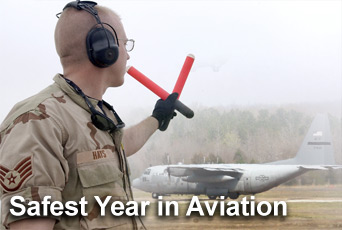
Air Force announces 2006 as safest year in aviation

Fiscal year 2006 was the safest year in aviation ever for the Air Force. The year marked the lowest number of major aircraft accidents and fatalities within the Department of Defense.